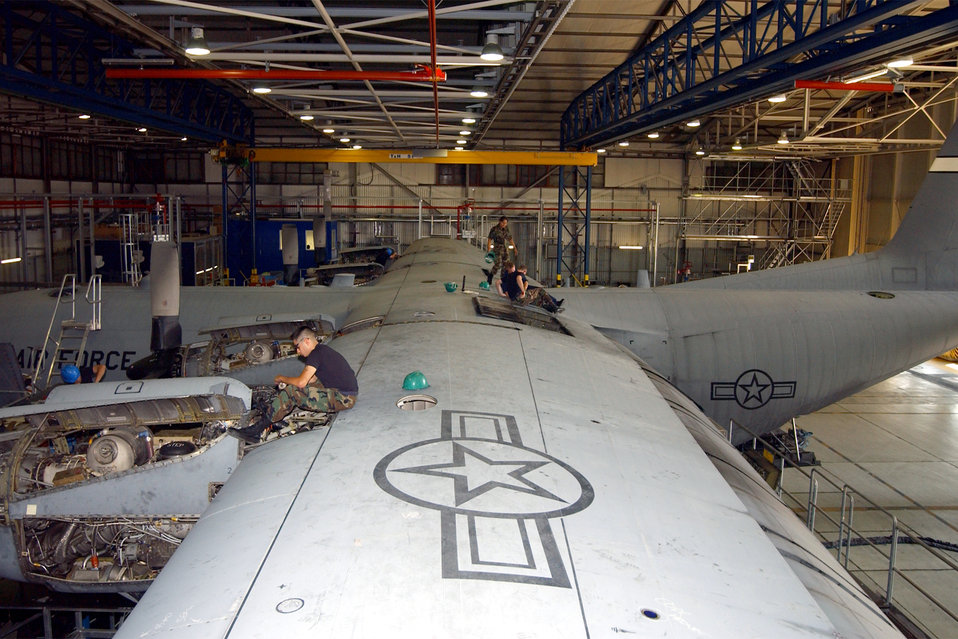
Inspection

RAMSTEIN AIR BASE, Germany -- Airmen completed a major inspection recently on a Kentucky Air National Guard C-130 Hercules. The inspection marked the first time a deployed aircraft has undergone an isochronal inspection here.